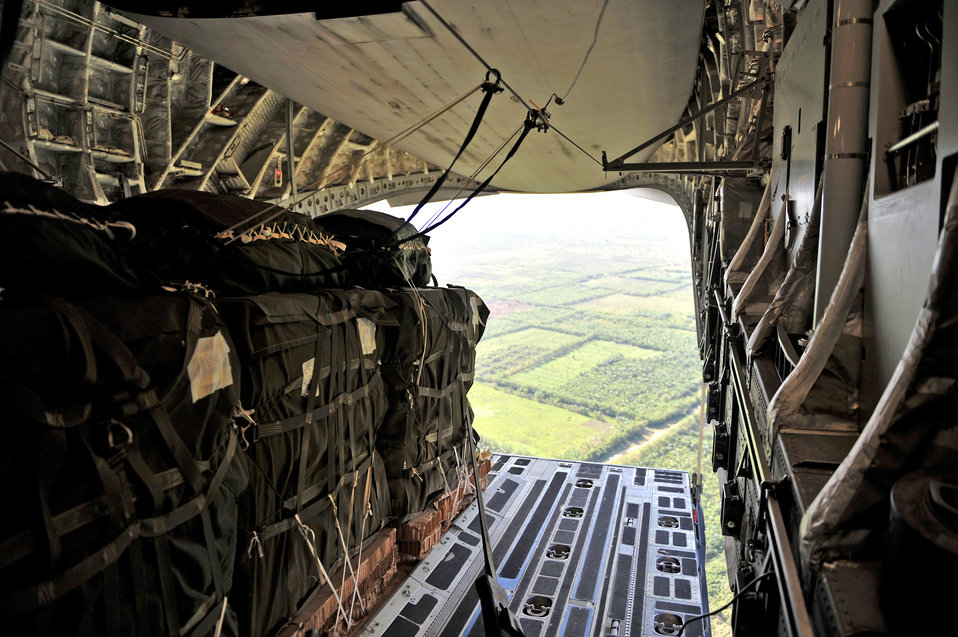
Operation Unified Response

Pallets of relief supplies exit a C-17 Globemaster III cargo aircraft over Haiti Jan. 18, 2010. The C-17, crewed by Airmen from the 437th Airlift Wing at Charleston Air Force Base, S.C., departed Pope AFB, N.C., and delivered 40 pallets of food and water into Haiti. Joint Task Force-Haiti secured the area where the supplies were delivered. Once on the ground, supplies were distributed by JTF-Haiti, the U.S. Agency for International Development and other relief personnel.